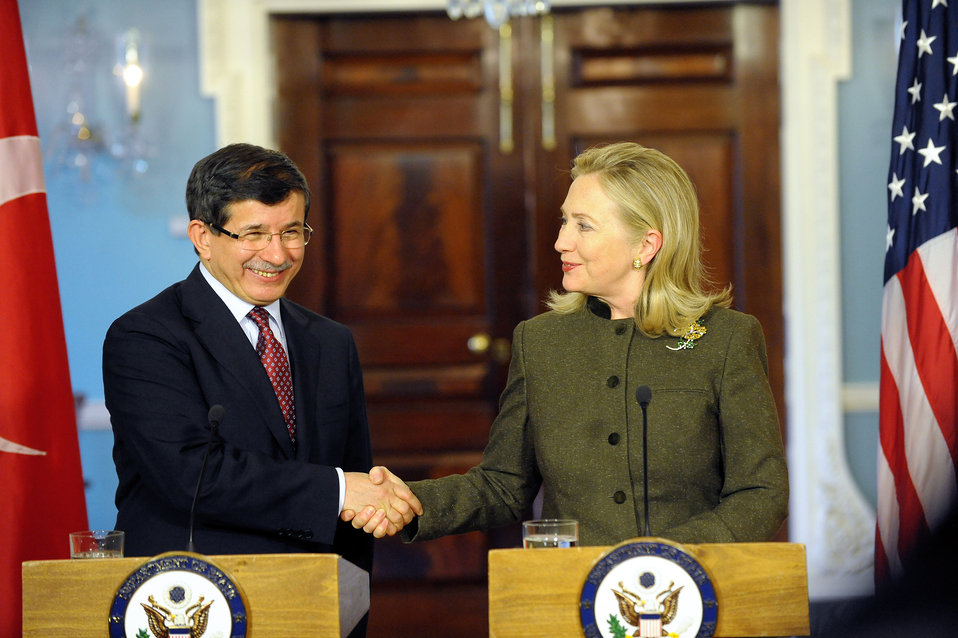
Secretary Clinton Meets With Foreign Minister Davutoglu of Turkey

U.S. Secretary of State Hillary Rodham Clinton meets with Turkish Foreign Minister Ahmet Davutoglu at the U.S. Department of State in Washington, D.C., on February 13, 2012.